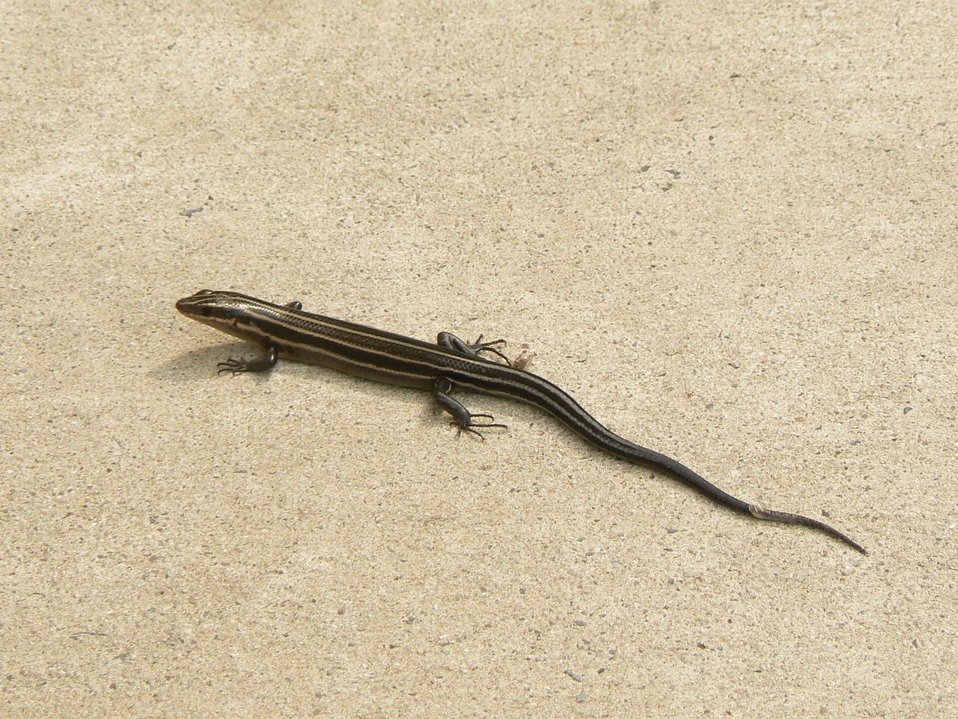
Five-lined skink at Cape May National Wildlife Refuge.